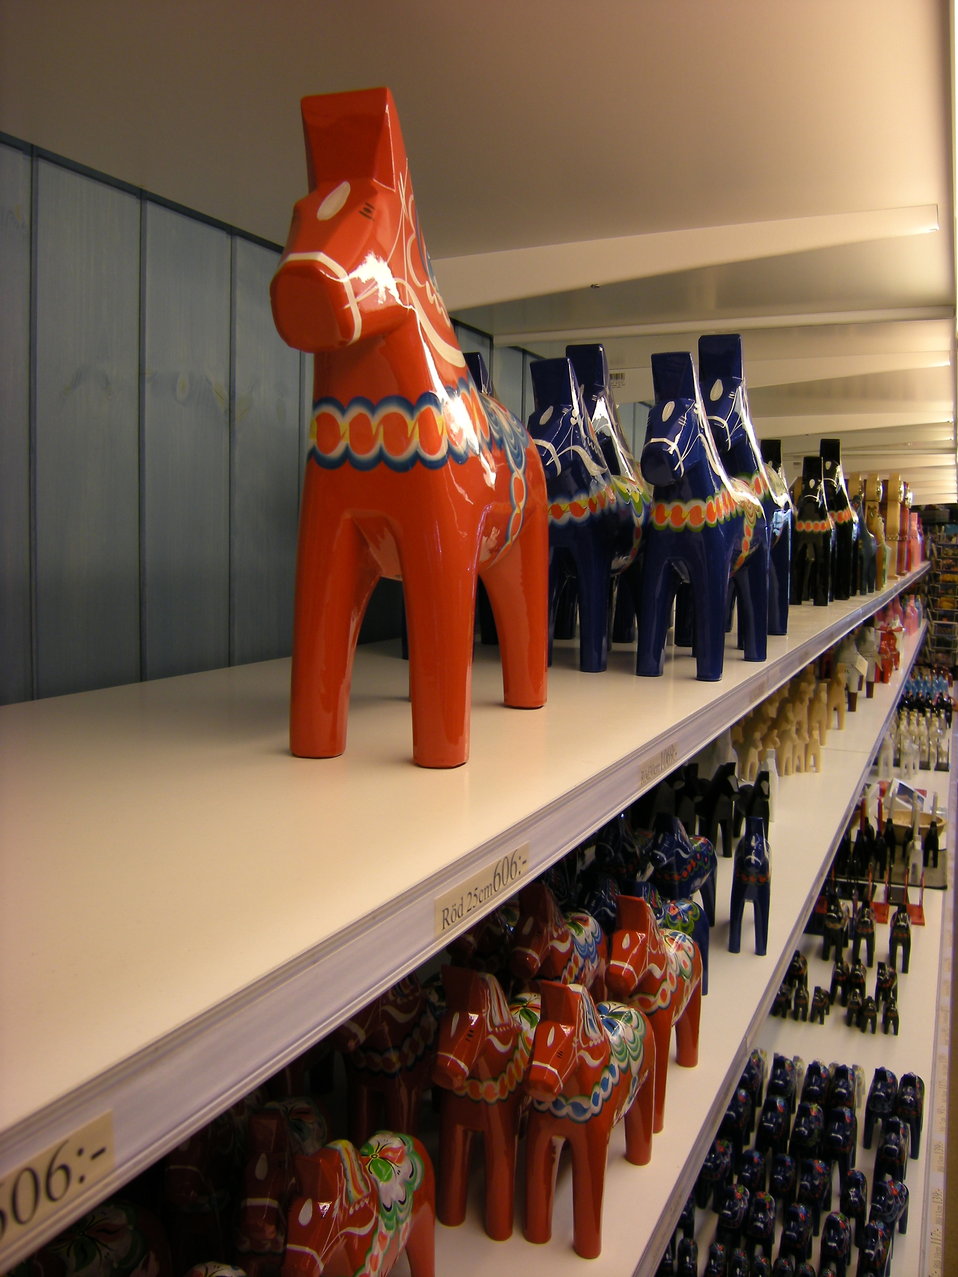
Svenska: Dalahästar Nusnäs